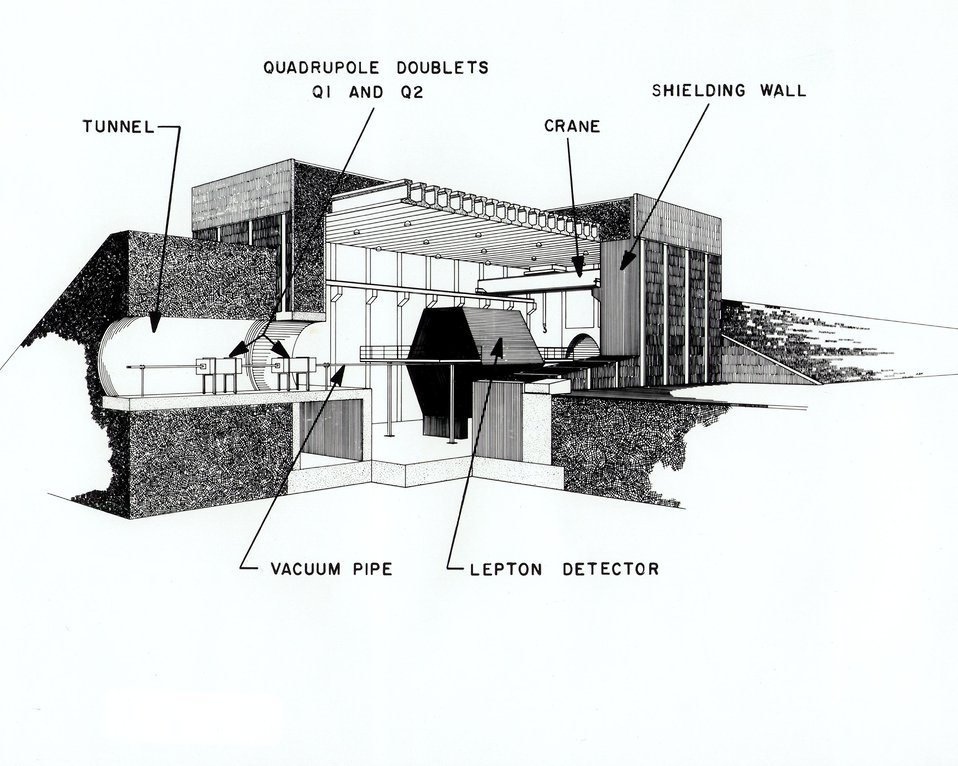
CBA IS A PROTON-PROTON COLLIDING BEAM ACCELERATOR BEING BUILT TO STUDY BASIC STRUCTURE OF ENERGY AND MATTER. THE FACILITY ITSELF IS AN UNDERGROUND CIRCULAR TUNNEL 3.8 KILOMETERS IN CIRCUMFERENCE. TWO RINGS OF SUPERCONDUCTING MAGNETS WILL BE INSIDE THE TUNNEL. PROTON BEAMS WILL BE INJECTED INTO THE TUNNEL AND ACCELERATED TO ENERGIES UP TO 400 GEV. AT SIX PLACES ALONG THE TUNNEL, THE BEAMS WILL COLLIDE. EXPERIMENTAL HALLS, DESIGNATED BY THEIR 'HAND OF CLOCK' POSITION AROUND THE RING, ENCLOSE THESE SIX INTERSECTIONS AND WILL HOUSE EQUIPMENT FOR STUDYING THE RESULTS OF THE COLLISIONS.